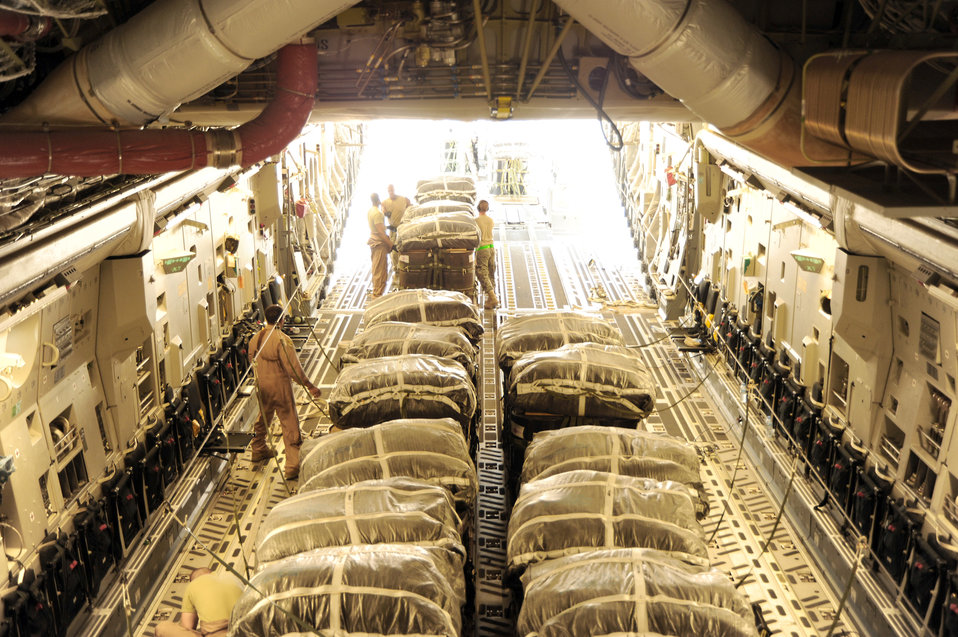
Operation Everest C-17 airdrop

Airmen load bundles onto a C-17 Globemaster III prior to an airdrop mission Aug. 13, 2010, in Southwest Asia.